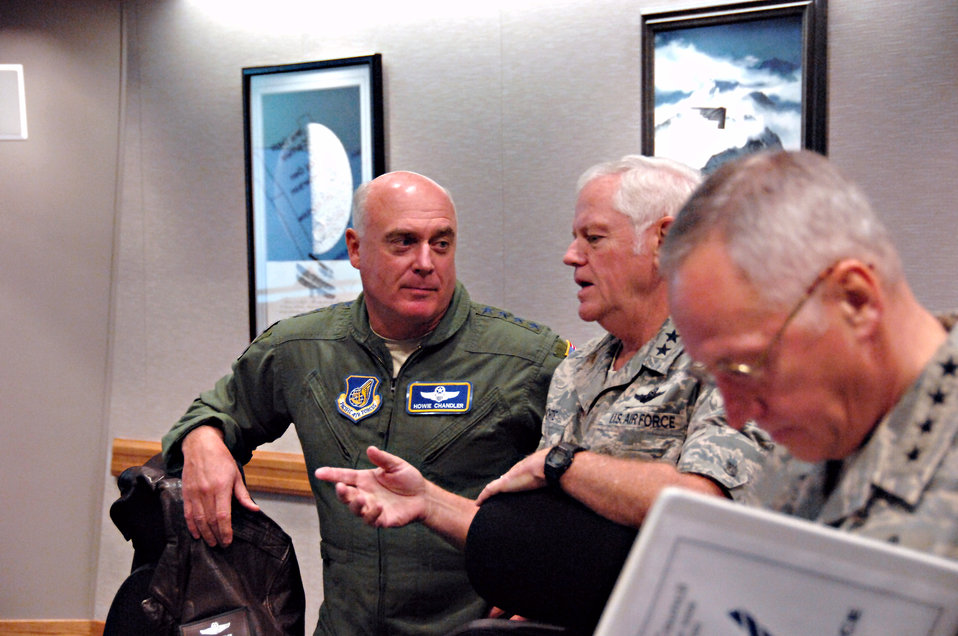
Top AF leaders convene for quarterly council meeting

Gen. Carrol H.